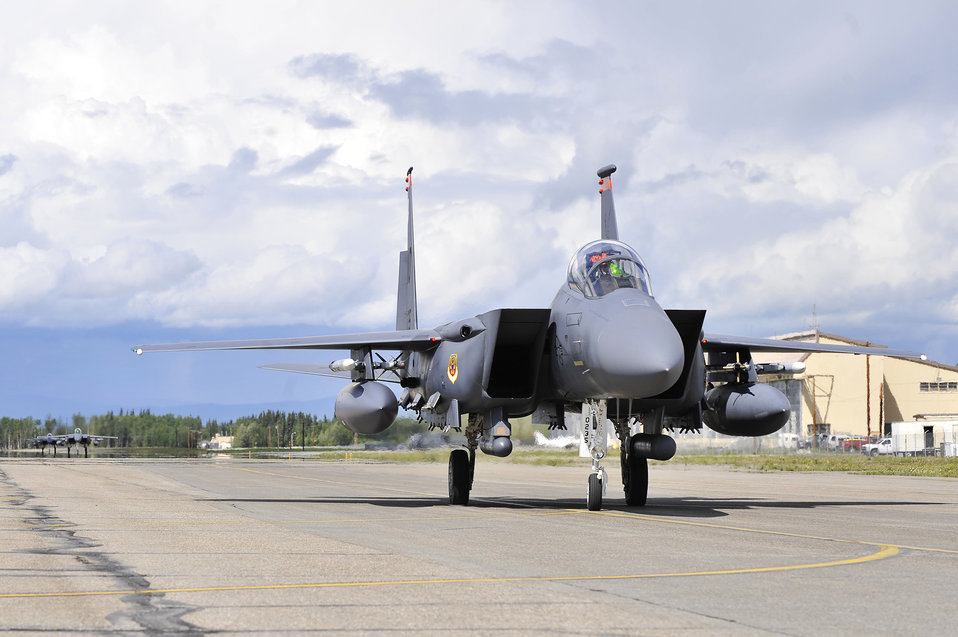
NORTHERN EDGE 2011 exercise

An F-15E Strike Eagle taxis June 13, 2011, after completing the first sortie of the NORTHERN EDGE 2011 exercise at Eielson Air Force Base, Alaska.